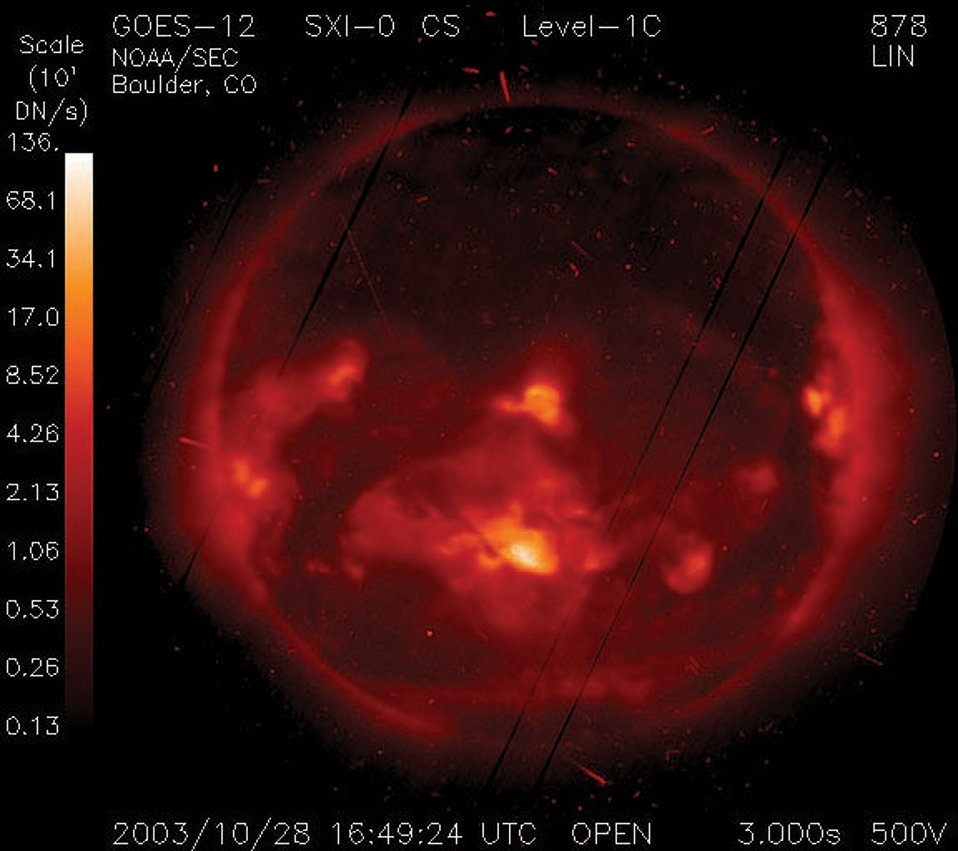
Solar flare third largest recorded

SATELLITE IMAGE -- A Solar X-ray Imager captured solar activity Oct. 28. The images are used to monitor and forecast solar features that lead to geomagnetic storms.